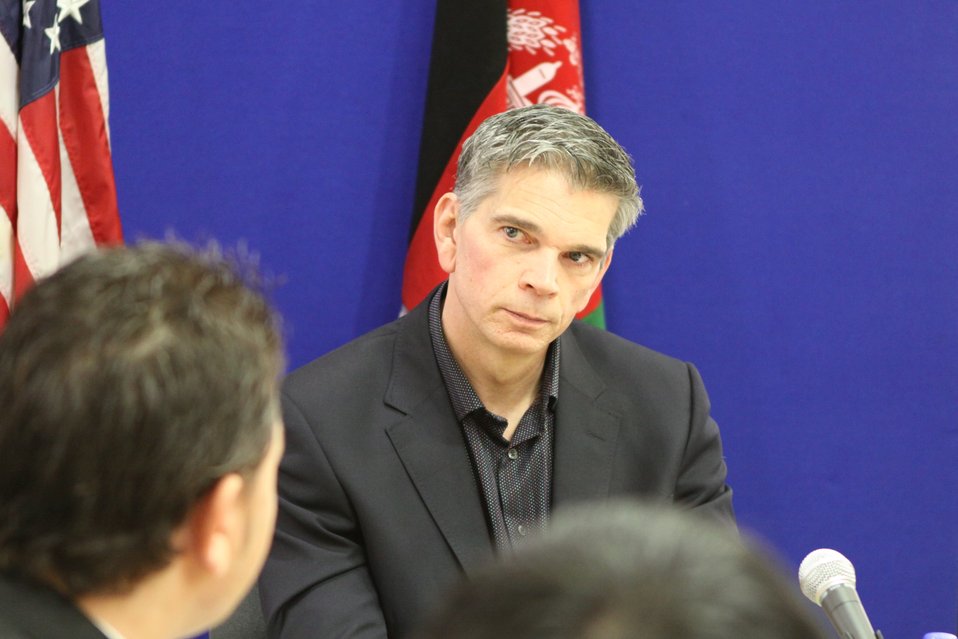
USAID Mission Director Earl Gast Conducts a Media Roundtable with Afghan Media, March 17, 2011